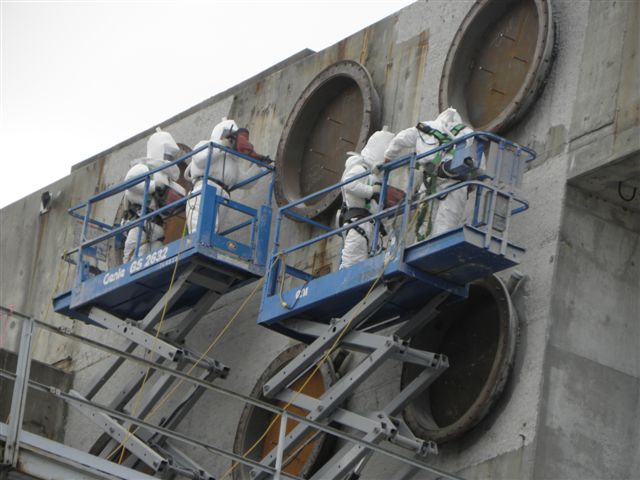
P Reactor decommissioning

Recovery Act workers close ducts as part of ongoing efforts to decommission the P Reactor, which formerly supported the production of nuclear materials.